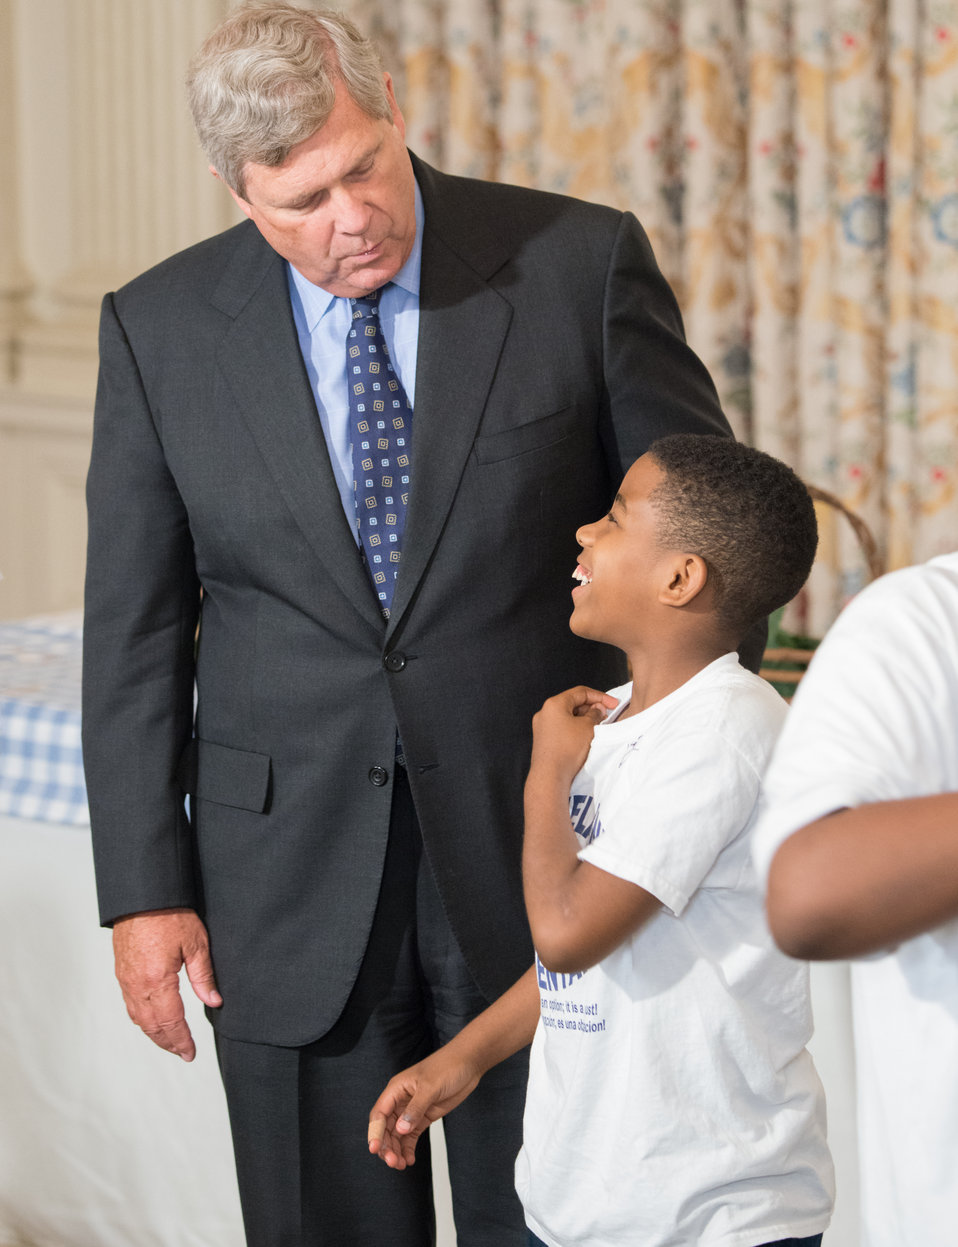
Agriculture Secretary Tom Vilsack with Washington, D.C. students from Cleveland Elementary School, Friendship Public Charter School, Kimball Elementary School, Bancroft Elementary School, Harriet Tubman Elementary School, who helped plant the garden in the spring make lunch from this year’s summer crop with the help of White House chefs and visiting school nutrition directors from Orlando, FL, Dallas, TX, and West Virginia in the State Dining Room of the White House in Washington, D.C. on Thursday, Jun. 12, 2014.